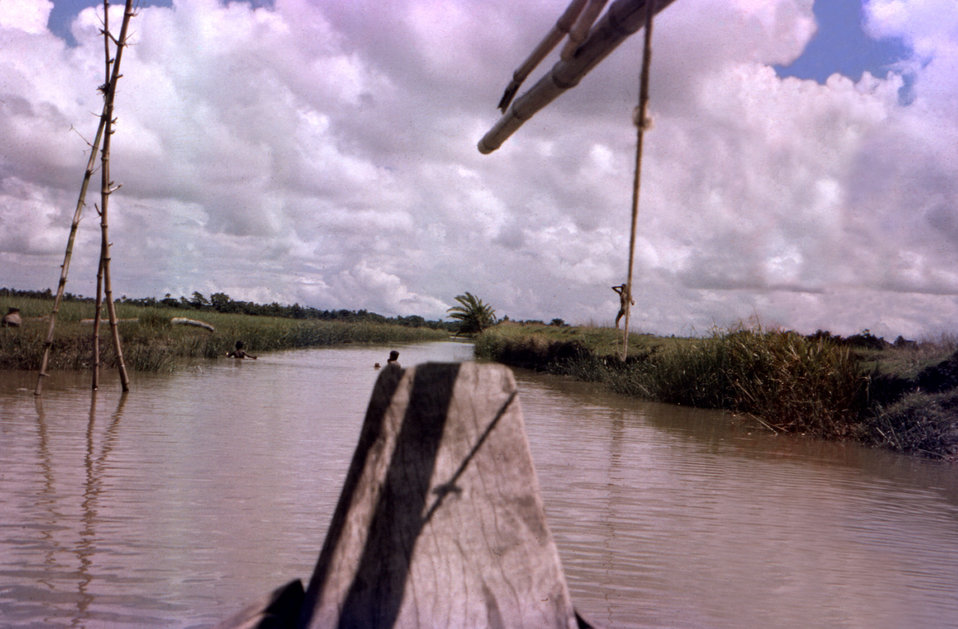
This photograph, which was captured in September, 1975, depicted a country boat, as its crew and passengers were being pulled along one of the many Bangladesh waterways.